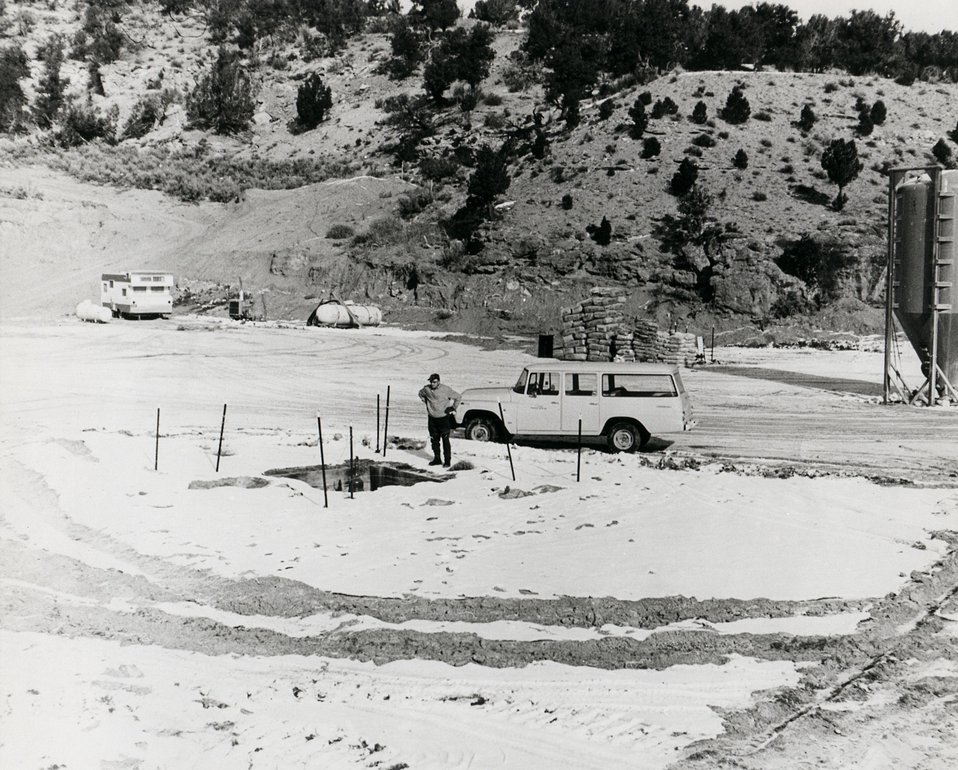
Rio Blanco emplacement well in the Piceance Creek Basin of northwestern Colorado, 50 miles north of Grand Junction. Circa 1973.